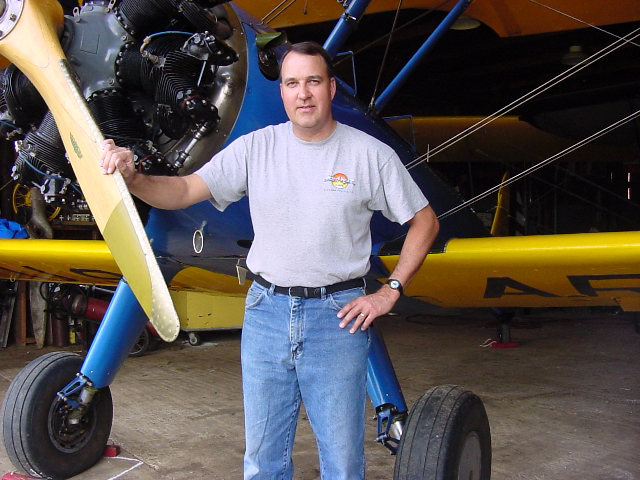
NCO owns vintage aircraft, drops bombs

ANDREWS AIR FORCE BASE, Md. -- Tech. Sgt. David Brown stands in front of his newly acquired 1941 PT-17. Brown is a medical logistics noncommissioned officer with the 459th Aeromedical Evacuation Squadron at Andrews Air Force Base, Md.